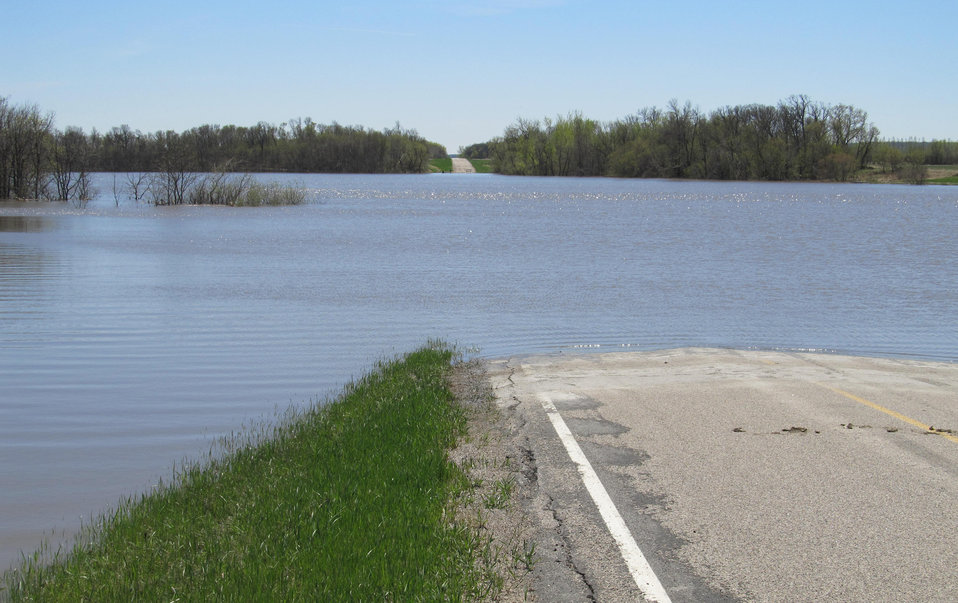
Flooding and water damage in the Park and Tongue River Watersheds located in Cavalier, Pembina and Cavalaier Counties in ND on Thursday, May 23, 2013.